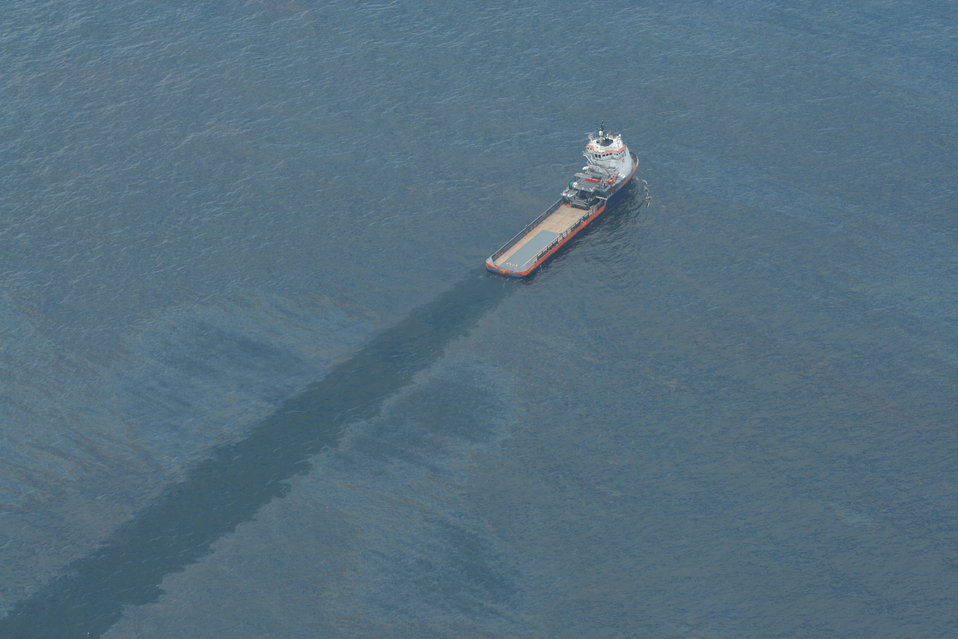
Flight 8 089